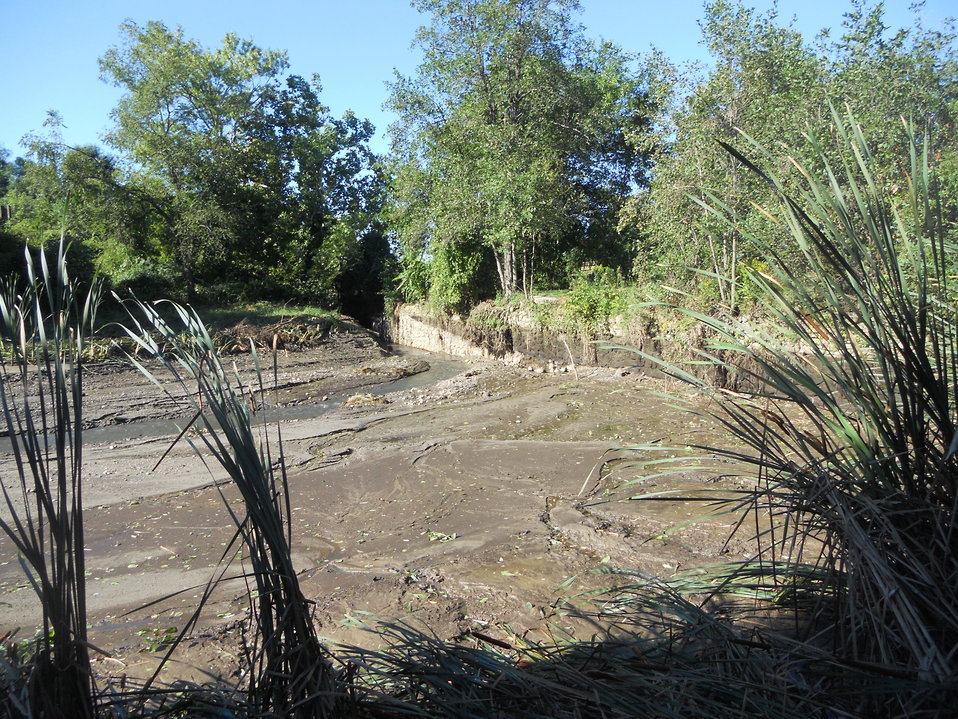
Hurricane Damage at Wallkill River National Wildlife Refuge August 30, 2011

Damage to Dagmar Dale Trail, Sussex, NJ.